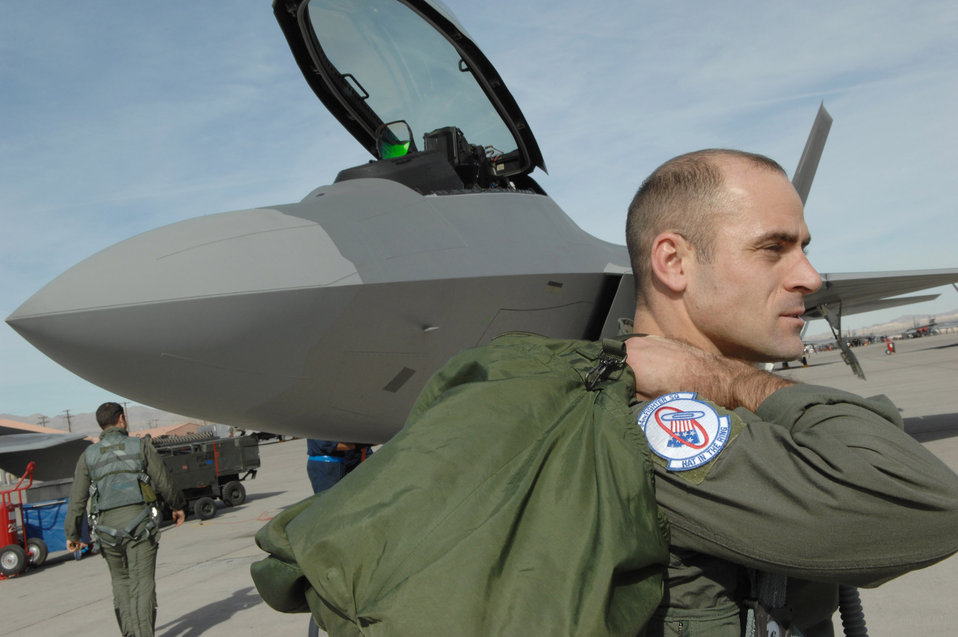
Raptors invade Nevada

Capt. Merrick Baroni steps out to his aircraft during Red Flag 07-02 Feb. 6 at Nellis Air Force Base, Nev. Red Flag sharpens aircrews' warfighting skills in realistic combat situations. The F-22s will be flying missions during the day and night to the nearby Nevada Test and Training Range where they will simulate an air war. The Air Force and Navy, along with military forces from Australia and the United Kingdom, are participating in Red Flag. Captain Baroni is an F-22 pilot with the 94th Fighter Squadron at Langley Air Force Base, Va. This is the first deployment to Red Flag for the 94th FS with the F-22.